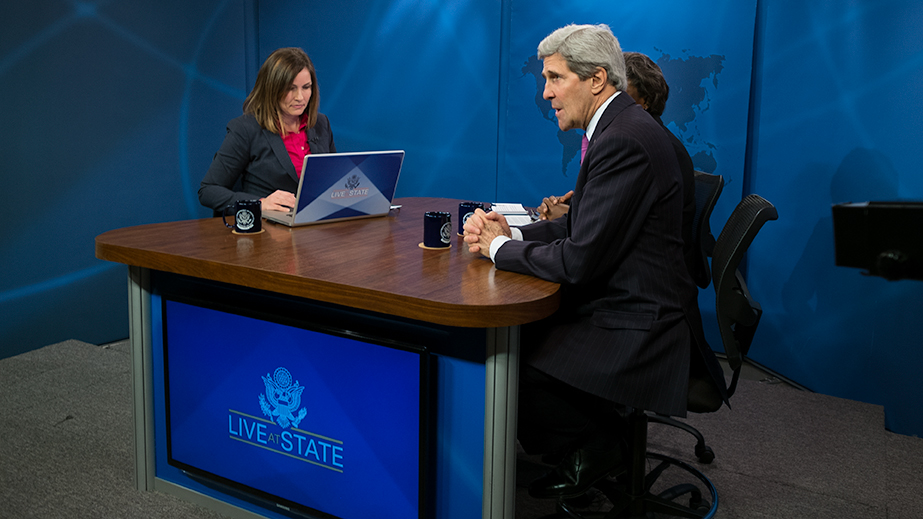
Secretary Kerry and Assistant Secretary Thomas-Greenfield Speak With African Journalists

U.S. Secretary of State John Kerry and Assistant Secretary of State for African Affairs Linda Thomas-Greenfield delivers remarks to 'Live@State: U.S. Africa Policy' with African journalists participating from across the continent, at the U.S. Department of State in Washington, D.C., on February 11, 2014. LiveAtState is the U.S. Department of State’s interactive on-line video platform for engaging with international media on top foreign policy issues.